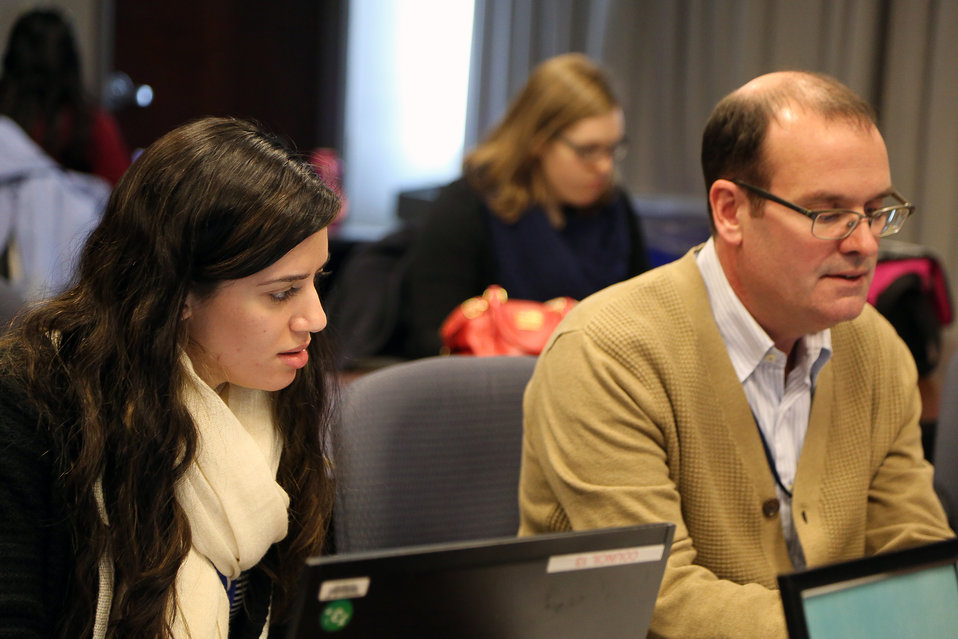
NIH Agencies Helped During Chat Day 2014

Chat Day Event held by the National Institute on Drug Abuse during its National Drug Facts Week Jan. 27-Feb. 2, 2014. Scientists from NIDA and other agencies answered questions about drugs from teens around the world on Jan. 29th in Rockville, Maryland.